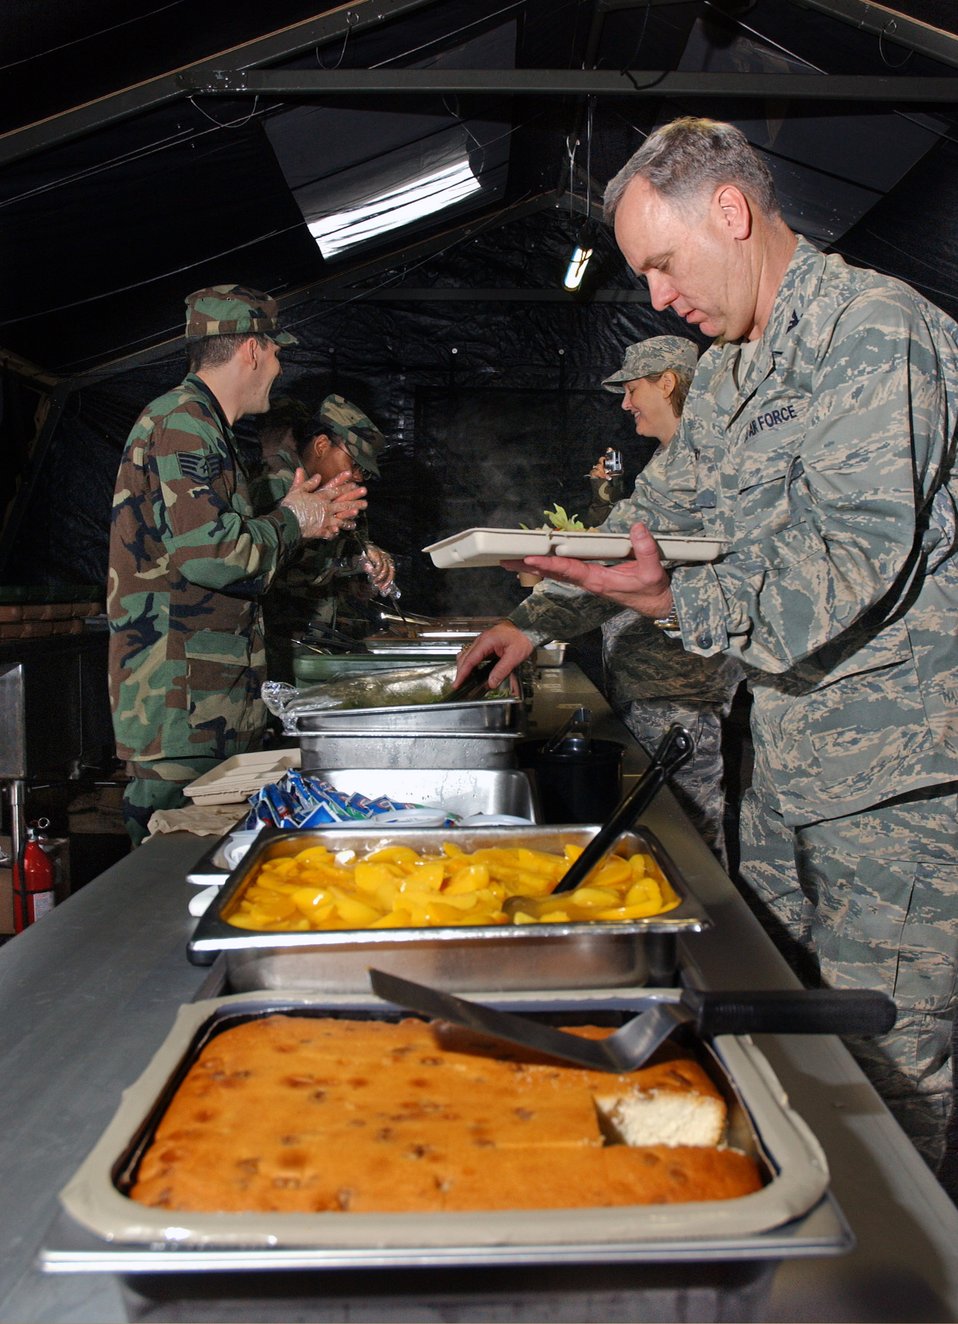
From pallet to palette

Col. Clifton Perry chooses from a variety of food offered by the 18th Services Squadron single pallet expeditionary kitchen during the Pacific Air Forces Operational Readiness Inspection March 11at Kadena Air Base, Japan. The deployable kitchen can be set up from pallet to serving in under four hours. PACAF is conducting the inspection from March 9 to 15 to validate the mission readiness of the 18th Wing. Colonel Perry is the 18th Wing chaplain.